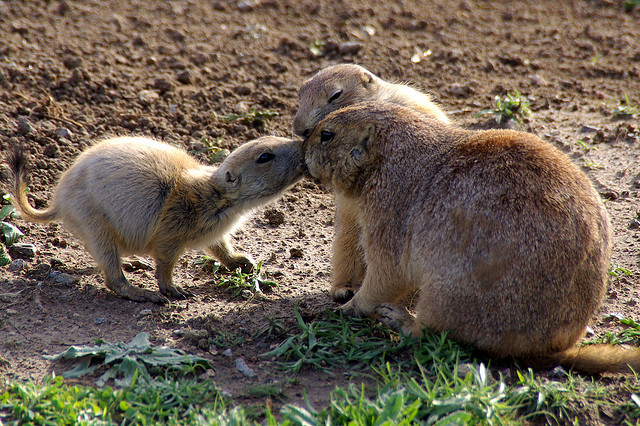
prairie dog family reunion

Wichita Mountains National Wildlife Refuge